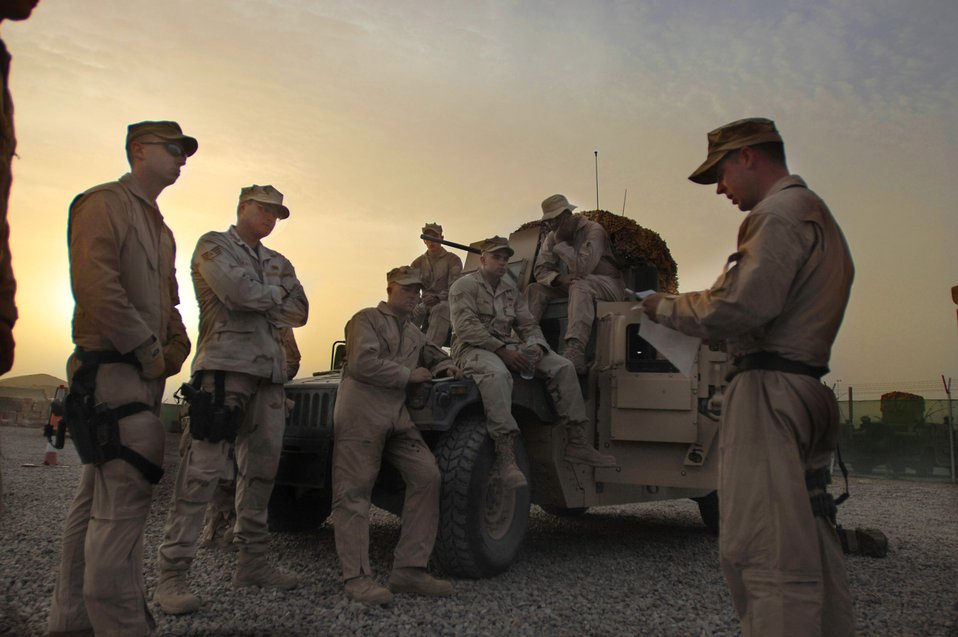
Dangerous road to progress

A team of security forces members gear up and conduct their morning brief on the day's events during their convoy to Iraqi police stations May 9 in Baghdad. Members of Det. 3, 732nd Expeditionary Security Forces Squadron, perform police transition teams mission of mentoring, coaching and teaching Iraqi police.